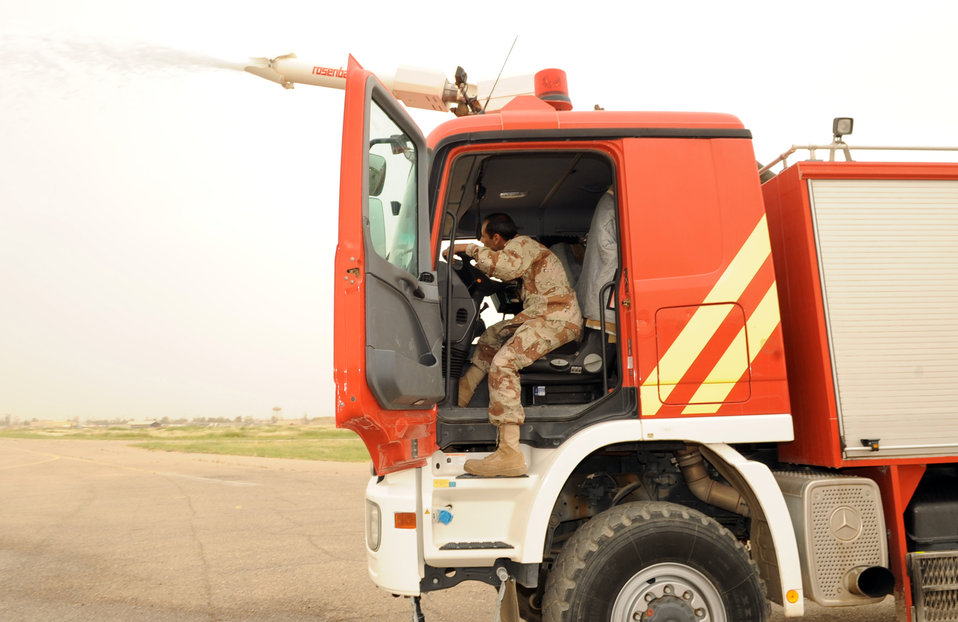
Iraqi, U.S. firefighters

506th Air Expeditionary Group and Iraq Training and Advisory Mission members facilitated a maintenance education day between the Province of Kirkuk Fire Department and the Iraq air force fire department April 12, 2010, at Kirkuk Regional Air Base, Iraq.